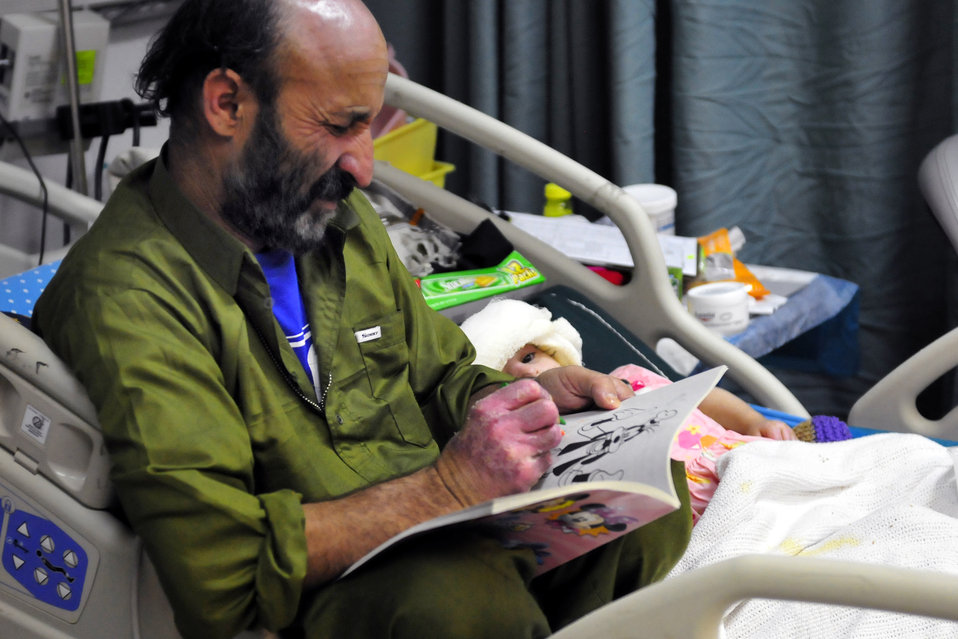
Family treated at CJTH

Ghulam Hazrat and his daughter, Satara, pass the time in recovery Jan 10, 2011, at the Craig Joint Theater Hospital at Bagram Airfield, Afghanistan. Several members of the Hazrat family were badly injured after a propane tank used to heat their home exploded.